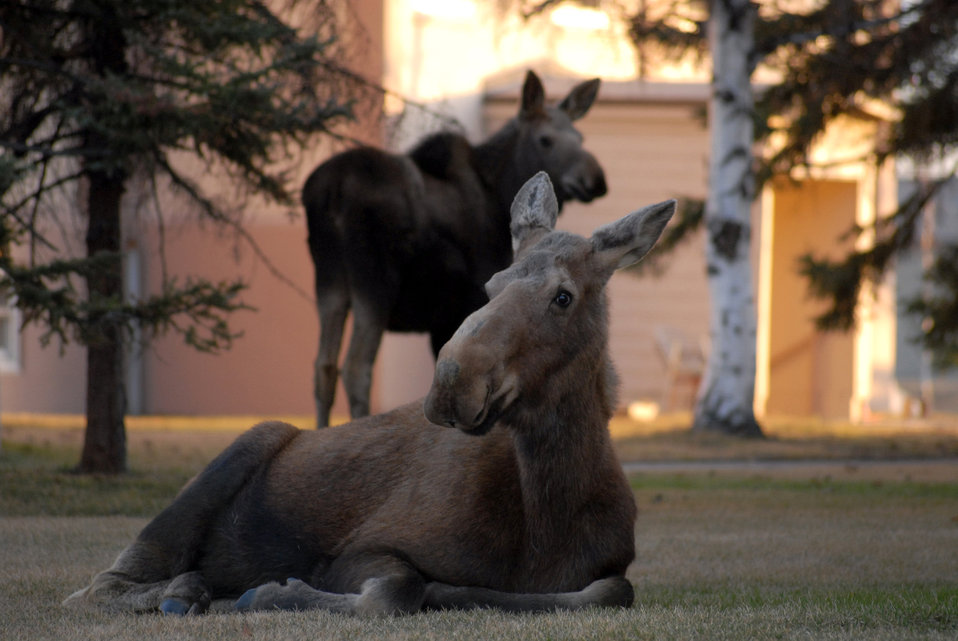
Alaskan Moose

An Alaskan Moose beds down beside a dormitory on April 29 at Eielson Air Force Base, Alaska. Moose are common sights during this time of year and special care must be taken not to get between a mother and her baby as she can turn very violent.